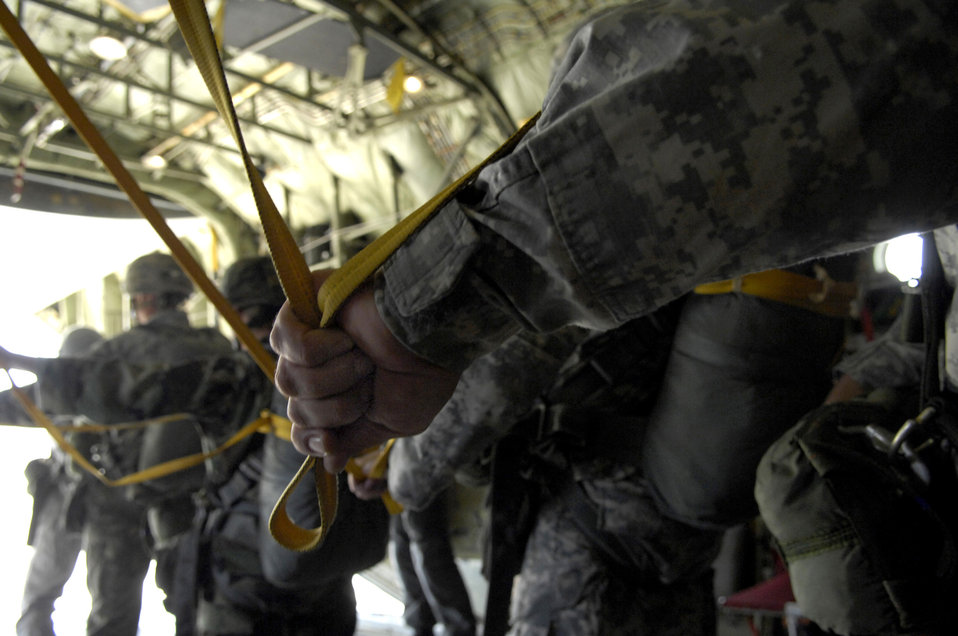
Jump training at Lackland AFB

Airmen from the 342nd Training Squadron at Lackland Air Force Base, Texas, along with SERE specialists, Marines, Soldiers and a Royal Air Force exchange officer conduct competency airborne training over Lackland July 23. Aircrew and aircraft are from the Marine Aerial Refueler Transport Squadron 234 at Joint Reserve Base/Naval Station Fort Worth, Texas.